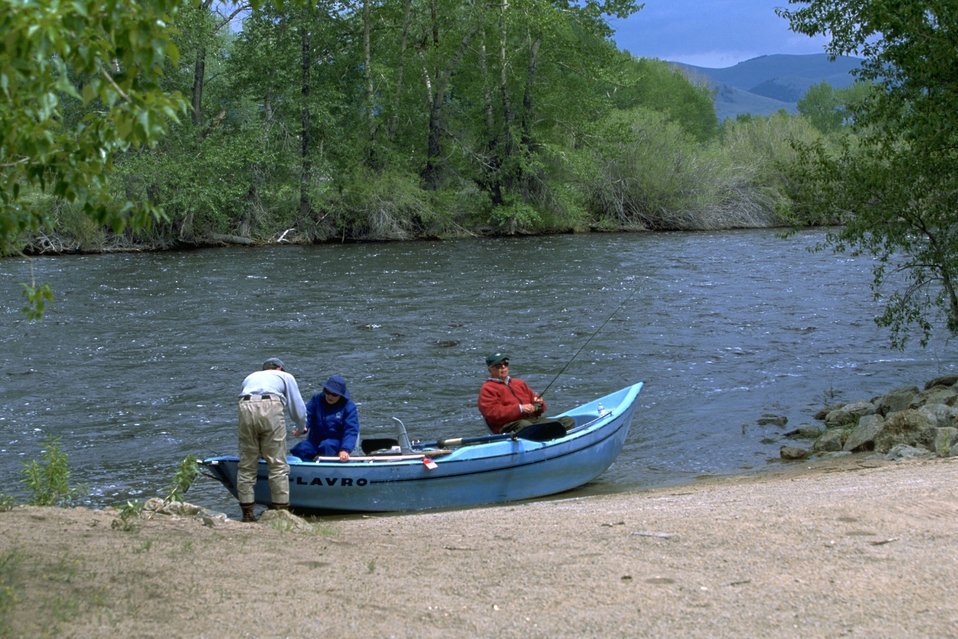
Docking a fishing boat at the Divide Day Use Area